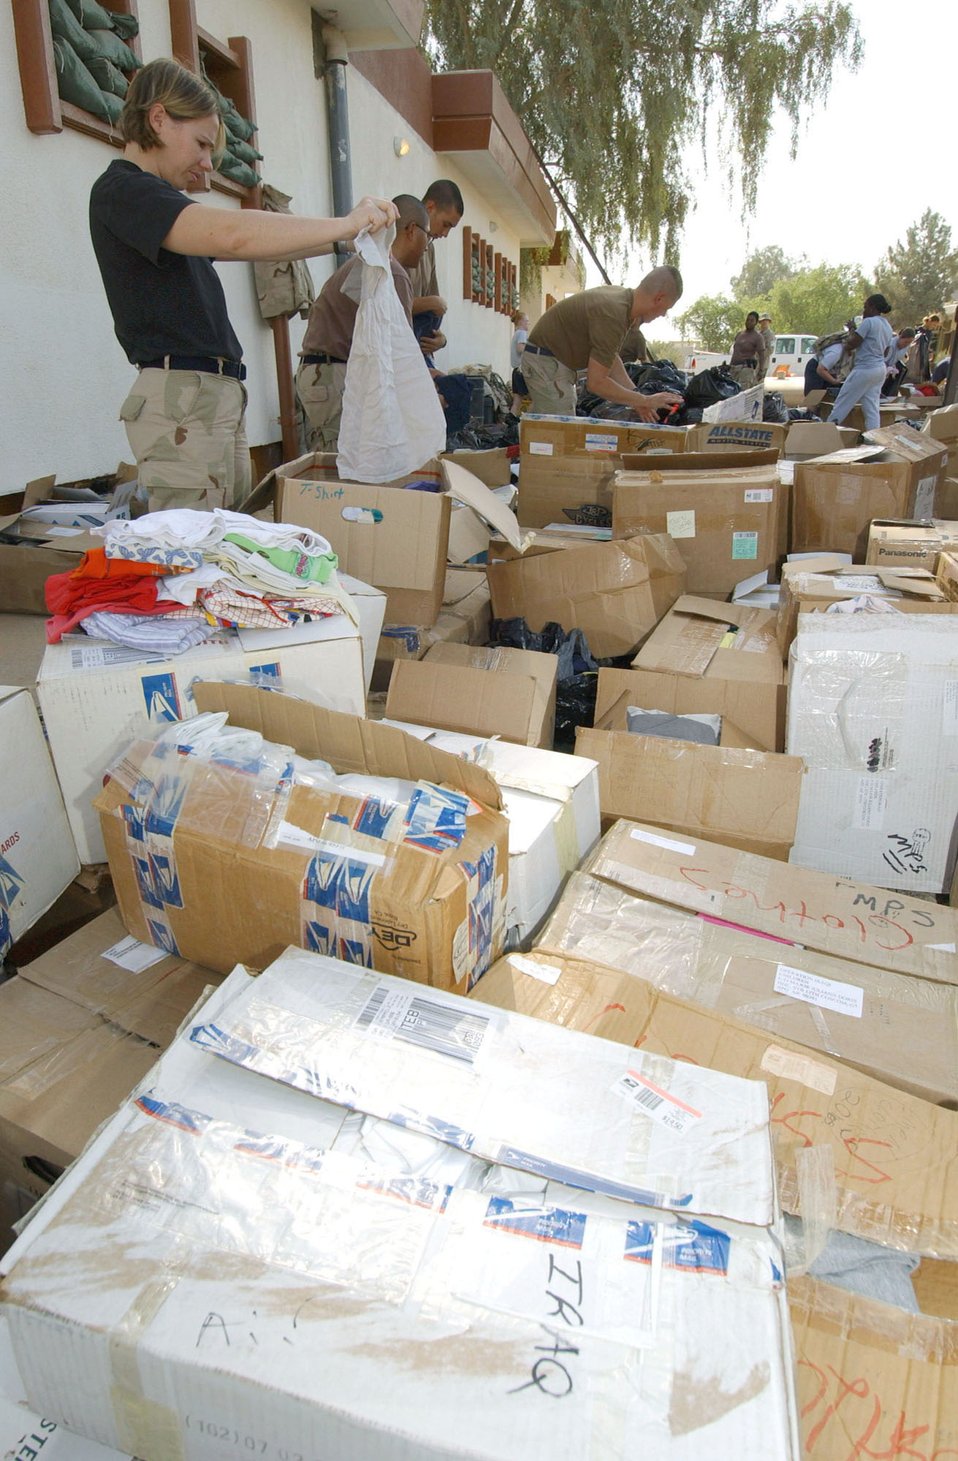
Airmen come together for humanitarian service

BALAD AIR BASE, Iraq -- Airmen from the 332nd Air Expeditionary Wing here organize school supplies and toys to be delivered to a local school.